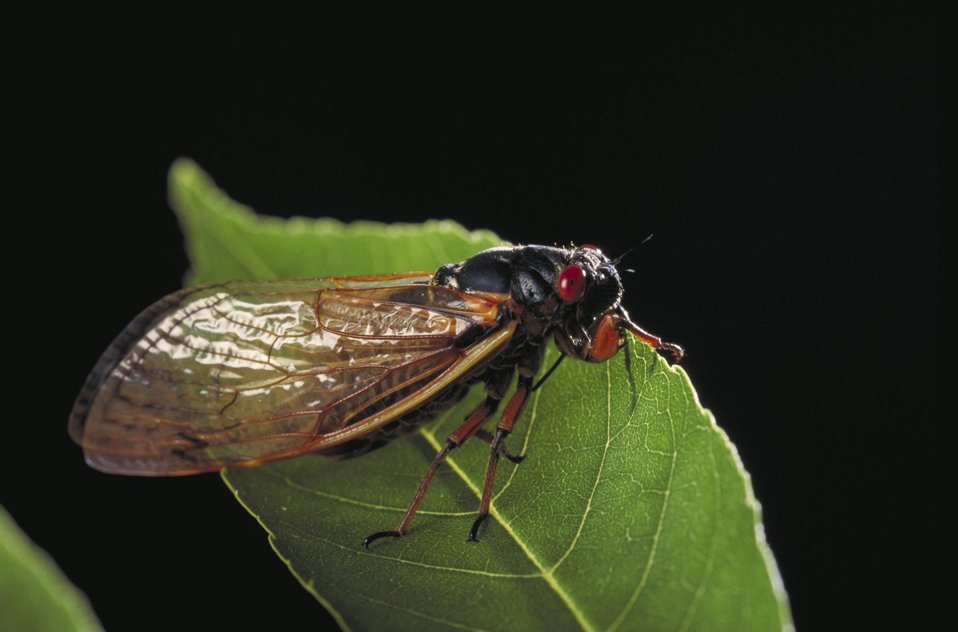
In the early spring of 2013 the eastern half of the U.S. will see and hear the emergence of the 17-year Cicada (Magicicada). The 17-year Cicada is a large insect with a black body, red eyes, and delicate wings about an inch and a half long. The Cicada will emerge from the ground as nymphs, climb onto trees and shed their skins. The males will then sing loudly to attract female mates. Once mated the females lay approximately 400 to 600 eggs in tree branches before they die. The nymphs hatch and burrow into the ground and live underground for the next 16 years sucking sap out of tree roots. The cicada’s above ground cycle lasts about a month before they die. Cicada’s have no sting or bite and are harmless to humans and pets, however the constant singing is annoying.